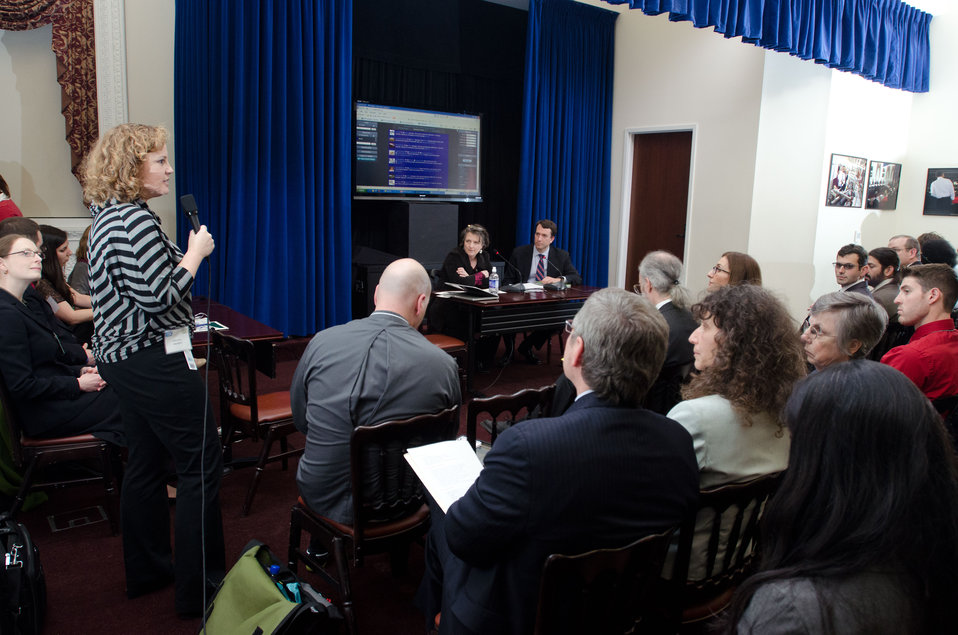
Agriculture Deputy Secretary Kathleen Merrigan (at table, left) and Director, White House Office of Public Engagement Jon Carson (at table, right) asked EcoTrust/FoodHub's Amanda Oborne (standing), to speak about food infrastructure, while at the about the White House, in Washington, D.C., on Monday, March 5, 2012. Food-Hub is emerging as incredible online platform to connect producers and buyers across the Northwest. Through Food-hub, producers can find ways to access new markets, and buyers can find local producers that meet their needs. Food-Hub is also using innovative web platforms and data to facilitate these relationships. Food-Hub received funds from a Rural Business Opportunity Grants (RBOG) program. The program promotes sustainable economic development in rural communities with exceptional needs through provision of training and technical assistance for business development, entrepreneurs, and economic development officials and to assist with economic development planning. The Know Your Farmer Compass event used twitter social media to virtually continue the National Conversation on Local and Regional Food projects and how they offer economic opportunities to local farmers, ranchers and food entrepreneurs.